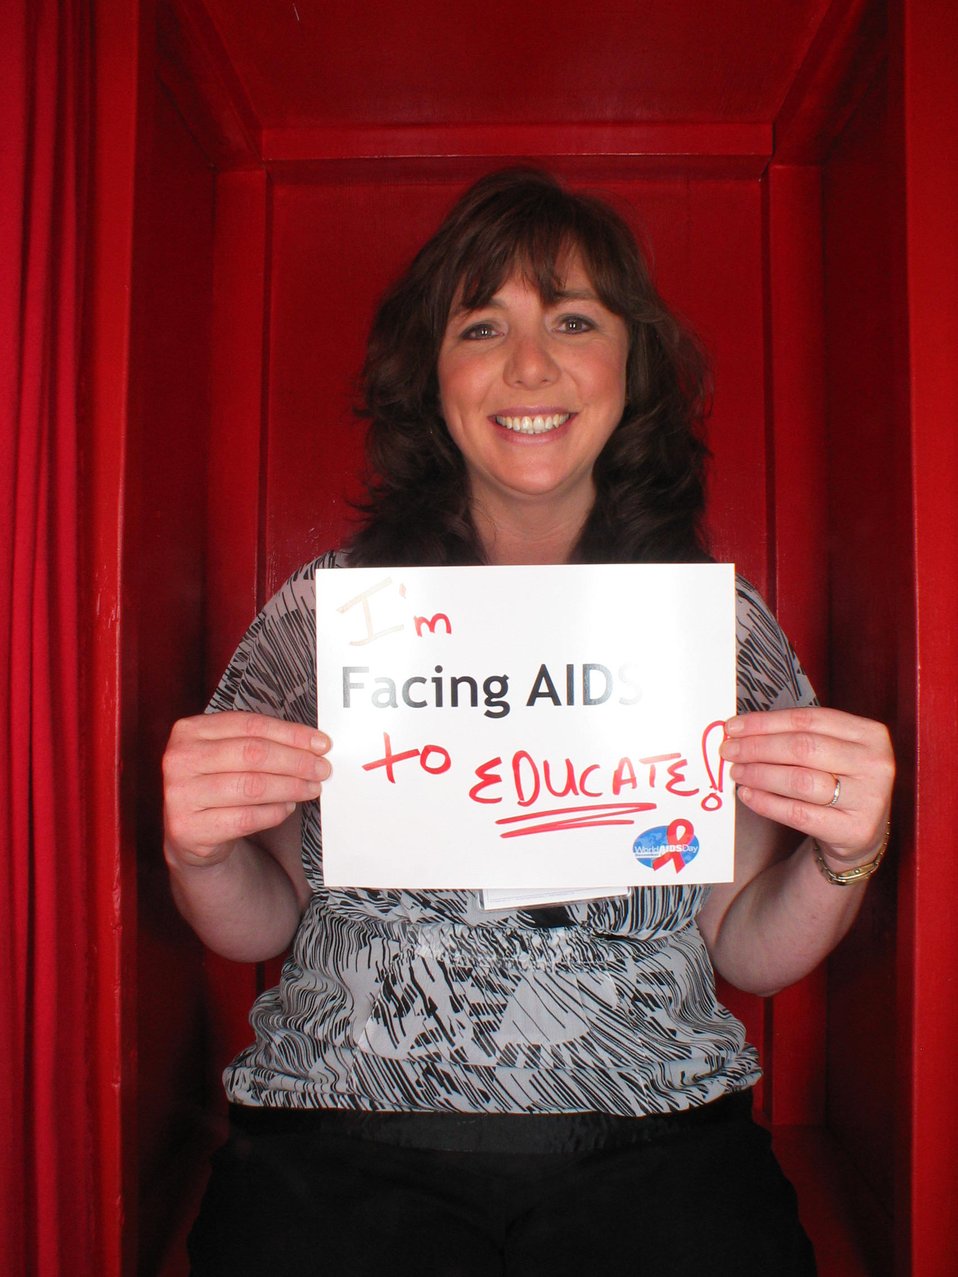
I'm Facing AIDS to educate!